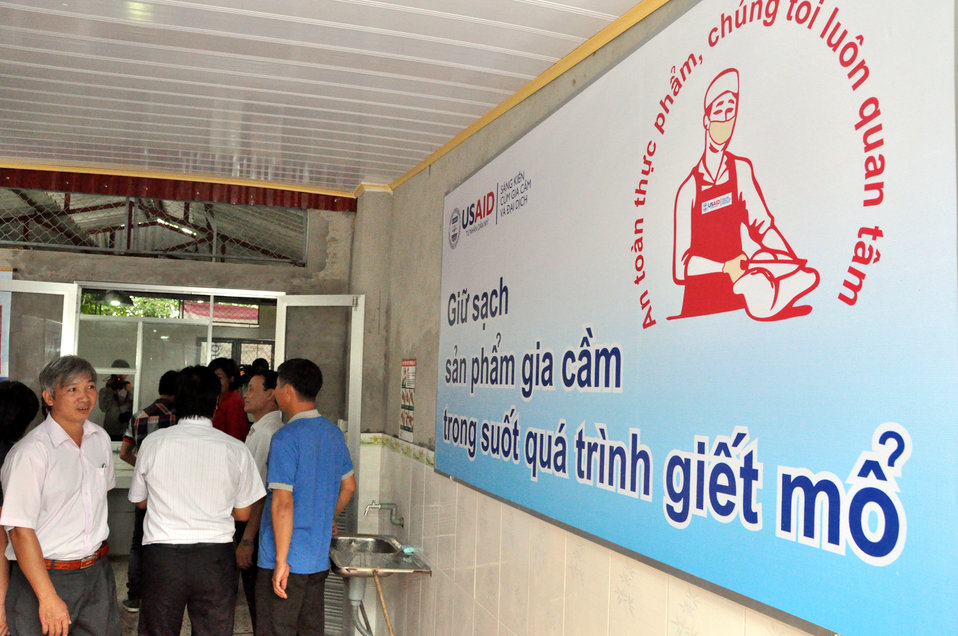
Handover Ceremony Hoa Mac Market Ha Nam

October 26, 2012